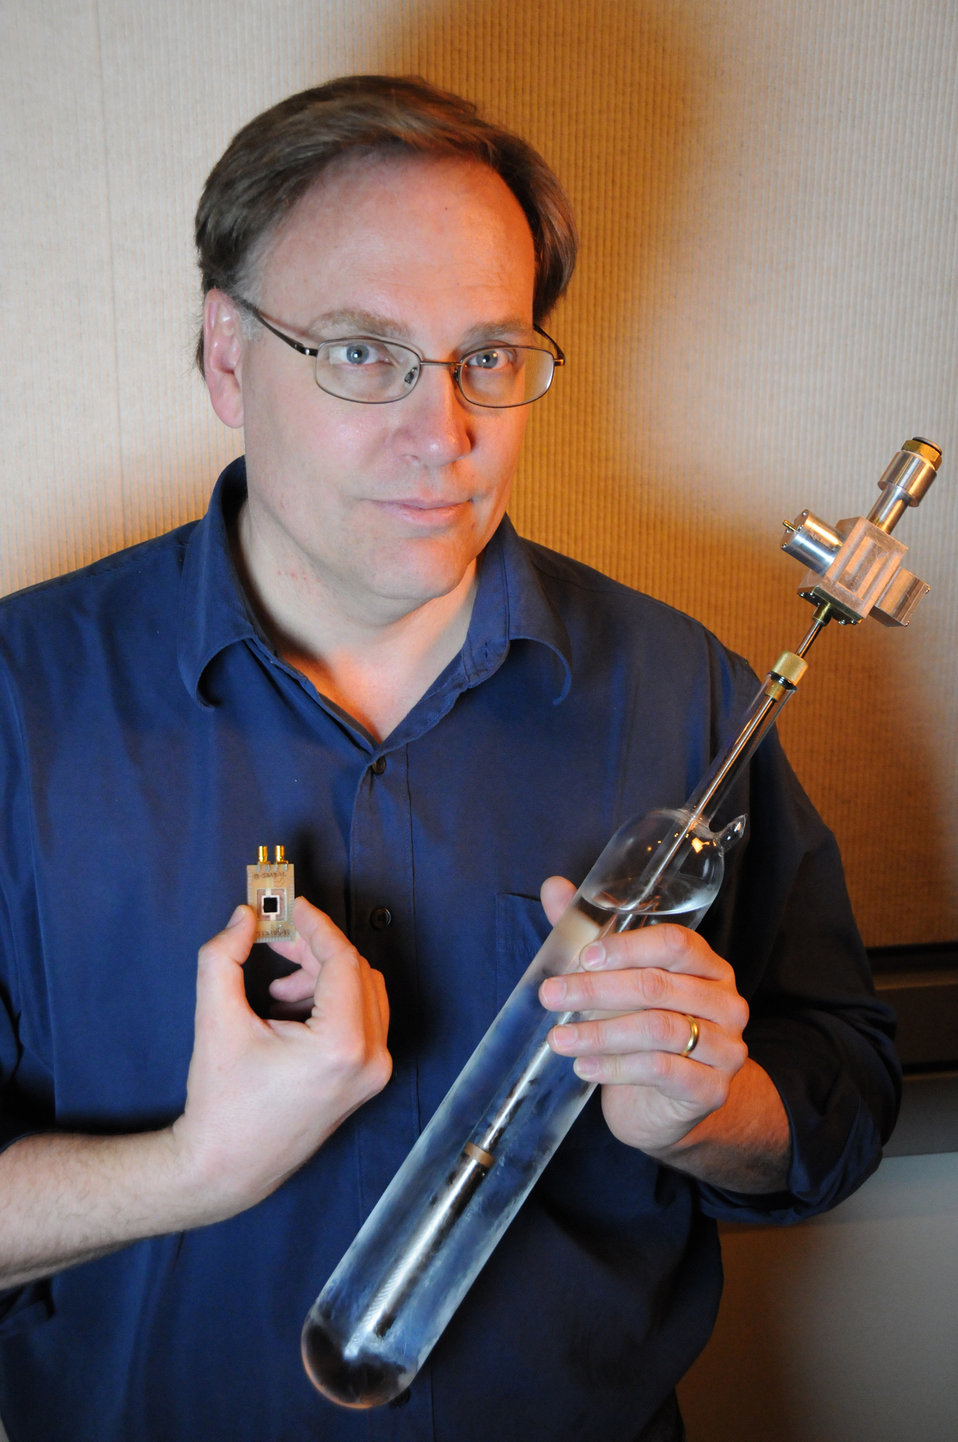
Samuel Benz

NIST physicist Samuel Benz holds the two components that are compared in the first electronic measurement of the Boltzmann constant. The ac reference signal generated by the superconducting chip (left) is compared to the 'Johnson noise' of a resistor inside the glass container (right). In the experiment, the water in the container is held at its triple point temperature near 0° C or 32° F.